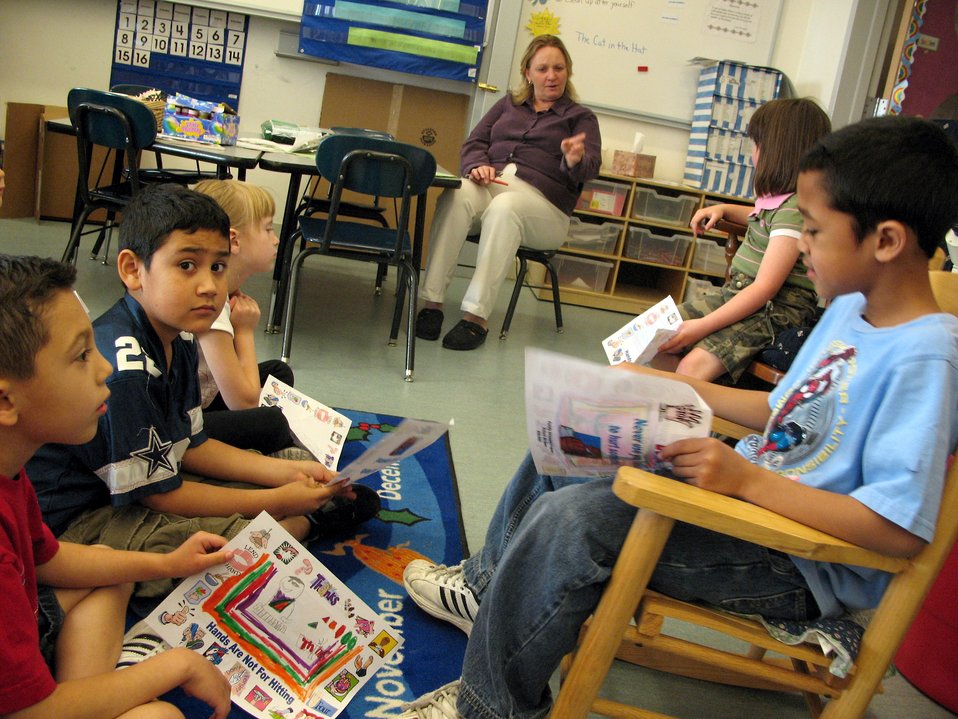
Program gives children positive outlets for problems

Elementary children share their drawings with other classmates April 23 at Aviano Air Base, Italy. Each child drew a picture of using their hands in a positive way instead of using their hands to hit others. Students drew pictures of themselves making a cake, playing an instrument and shooting hoops.